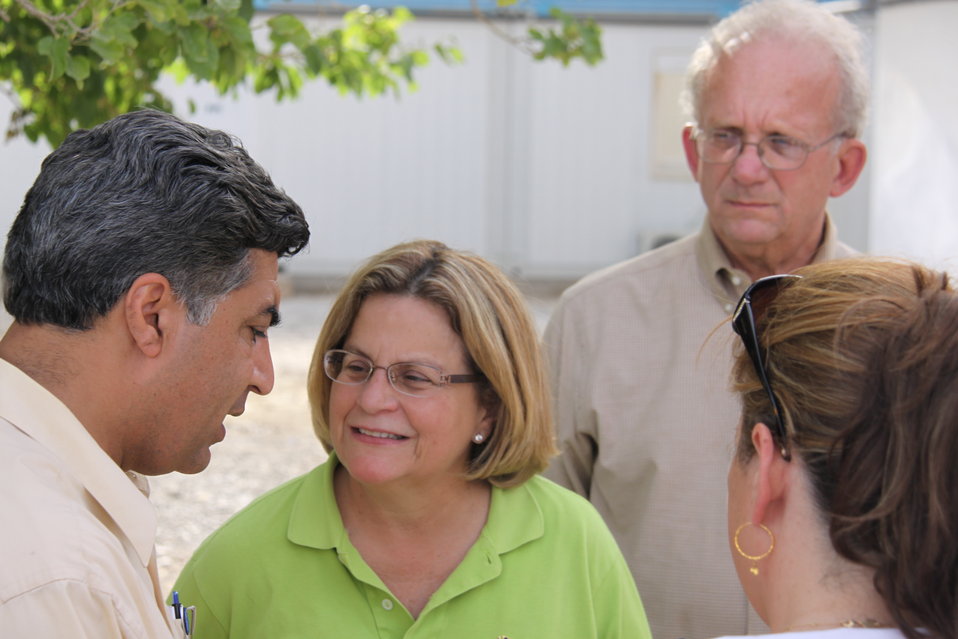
Meeting with Local Leaders in Kandahar